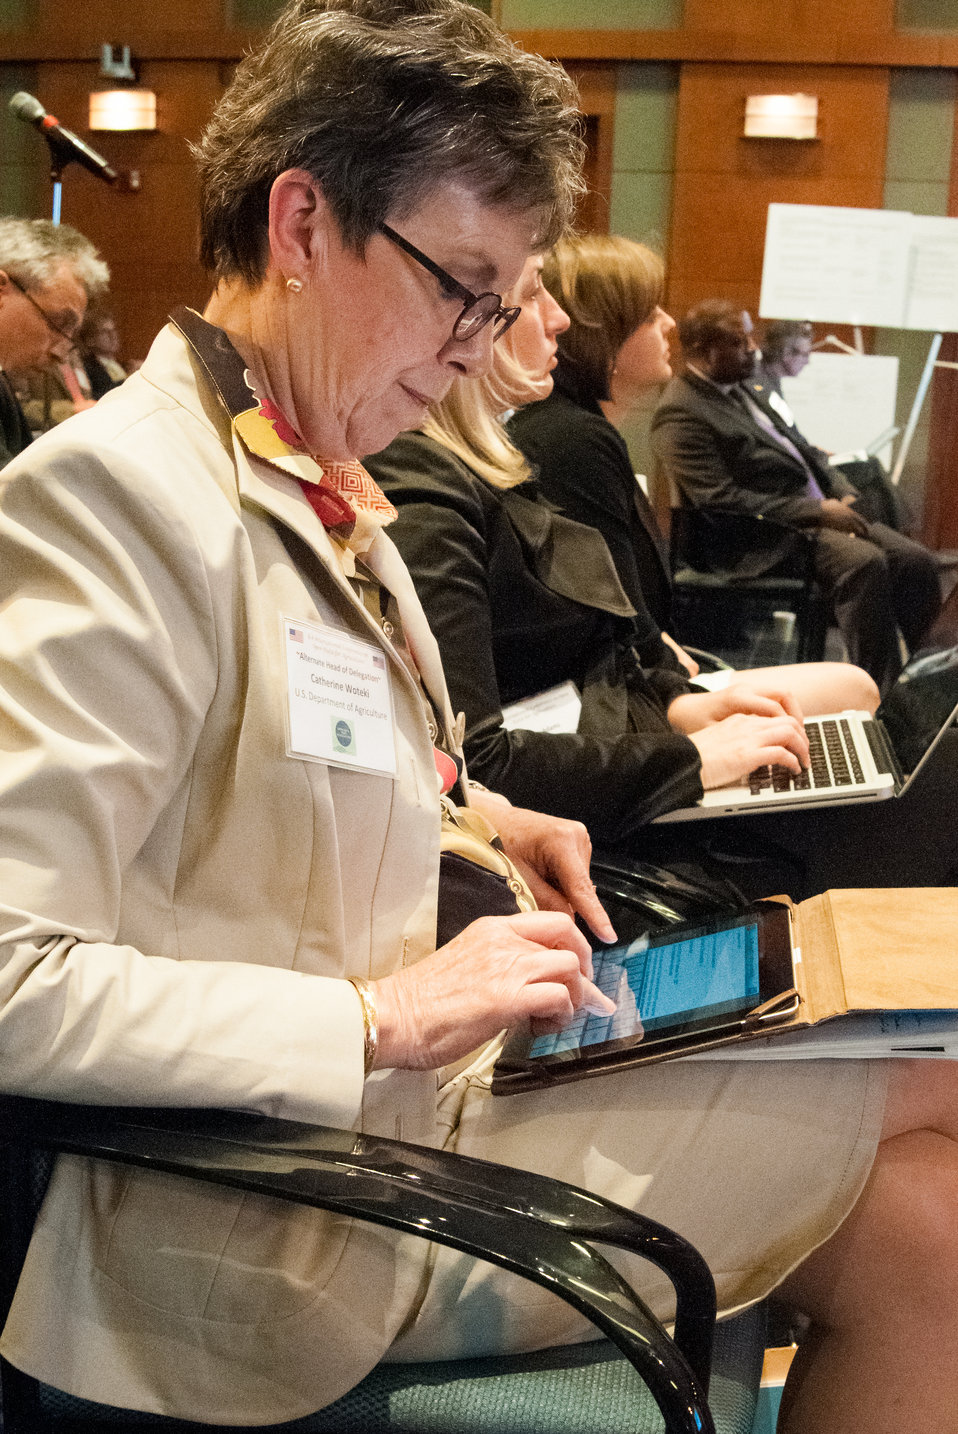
Agriculture Under Secretary Research, Education and Economics (REE), Host and Mistress of Ceremonies Dr. Catherine Woteki takes notes during the second day of the two day G-8 International Conference on Open Data for Agriculture in Washington, D.C. on Tuesday, Apr. 30, 2013. The conference launched a new 'virtual community' as part of a suite of actions, including the release of new data that the U.S. is taking to give farmers and ranchers, scientists, policy makers and other members of the public easy access to publicly funded data to help increase food security and nutrition.